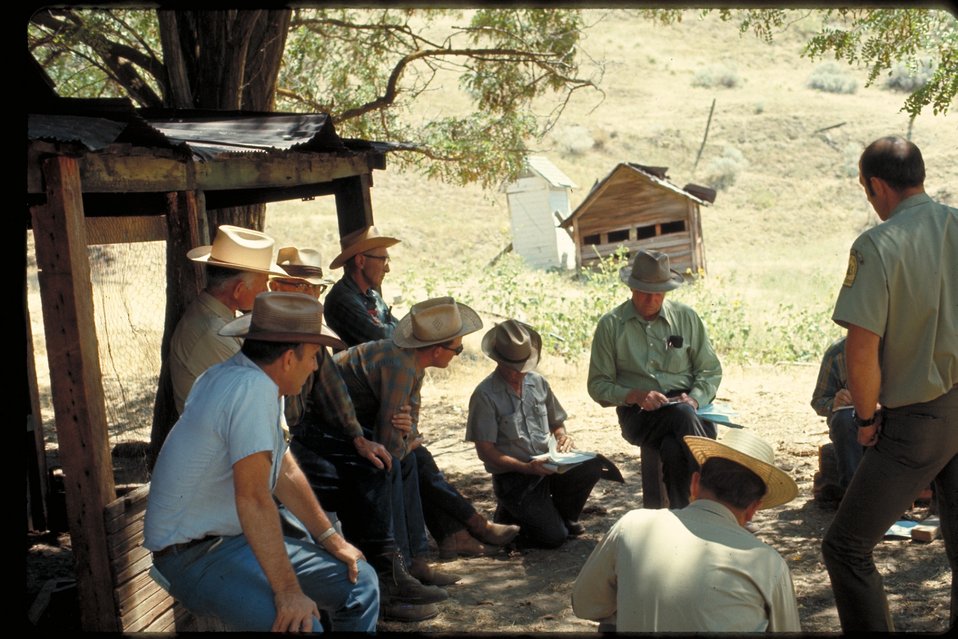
Boise Front users having a discussion Four Rivers Field Office LSRD Lower Snake River District